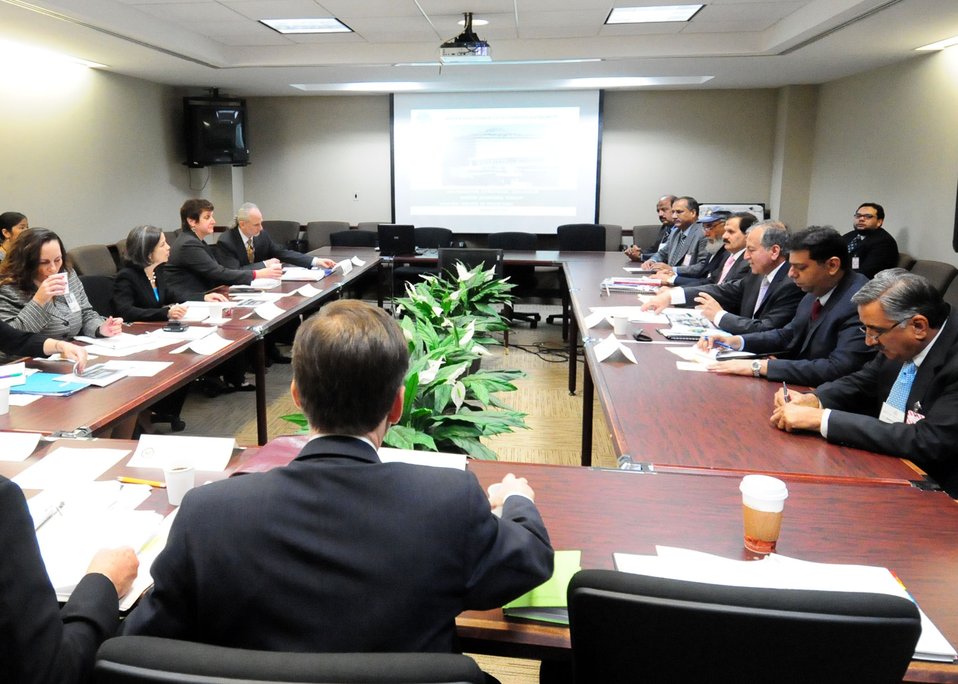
Under Secretary Otero Chairs the Water Working Group

Under Secretary of State for Democracy and Global Affairs Maria Otero chairs the Water Working Group of the U.S.-Pakistan Strategic Dialogue at the U.S. Department of State. In Washington, D.C., on October 20, 2010. Participants included State Department Under Secretary of State for Democracy and Global Affairs Maria Otero, Pakistani Secretary for Water and Power Javed Iqbal and Pakistani Secretary of Food and Agriculture Junaid Iqbal Chowdry.